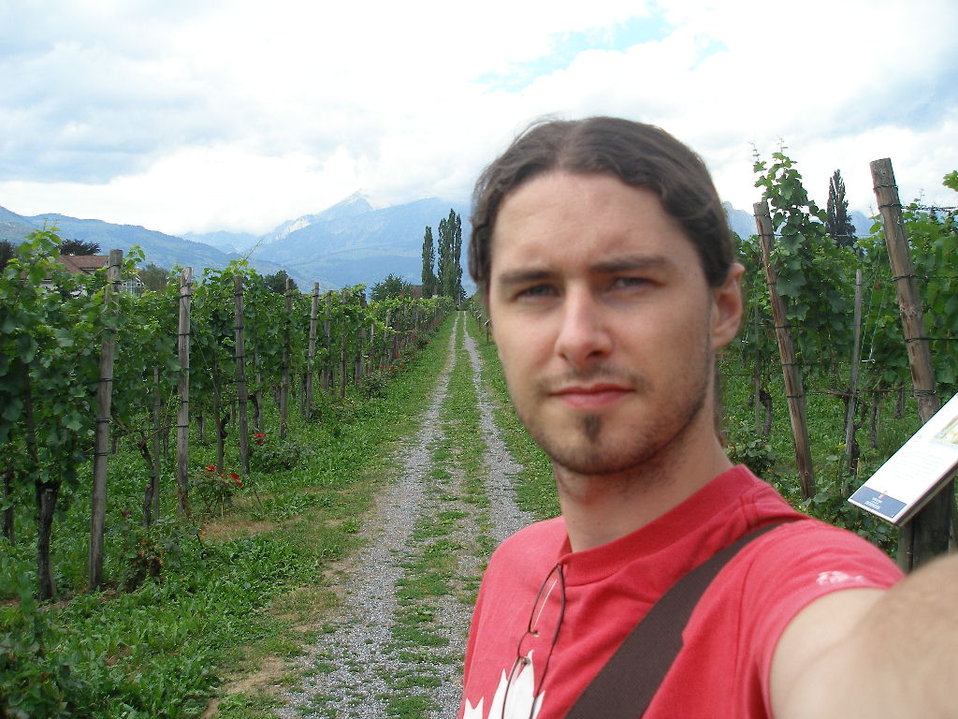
John Tinsley, person collection